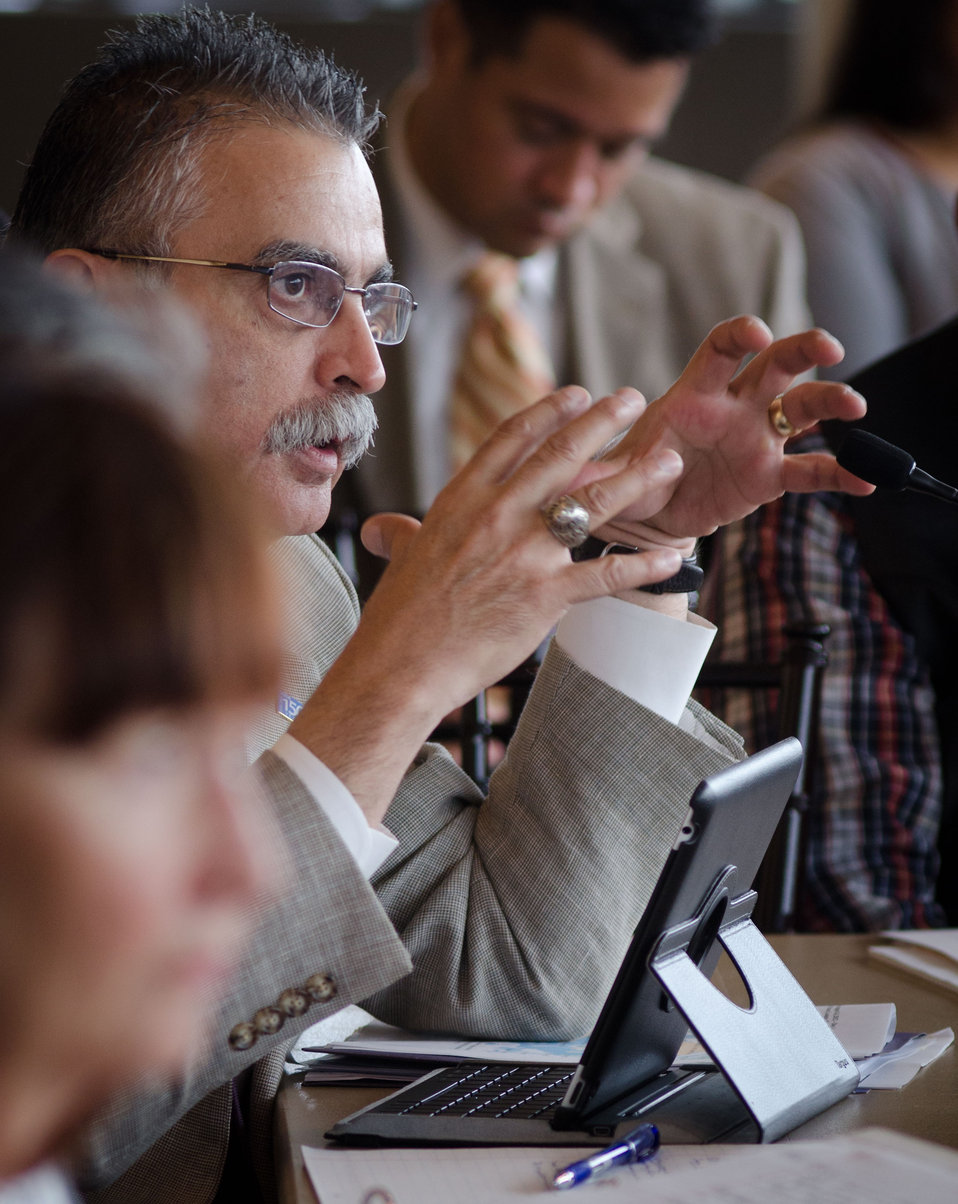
U.S. Department of Agriculture Farm Service Agency Administrator Juan Garcia, makes remarks during the U.S. Department of Agriculture's (USDA) Council for Native American Farming and Ranching (CNAFR), held on Tuesday, Aug. 14, 2012 at the National Museum of the American Indian, in Washington, D.C. CNAFR was created to advise the Secretary on ways to eliminate barriers to participation for Native American Farmers and Ranchers in USDA programs. The Council was established as part of the Keepseagle settlement, and is conducted under the oversight of USDA's Office of Tribal Relations, which is part of the Office of the Secretary of Agriculture. The Director of Tribal Relations Joanna Mounce Stancil serves as Designated Federal Official (DFO) for the Council.